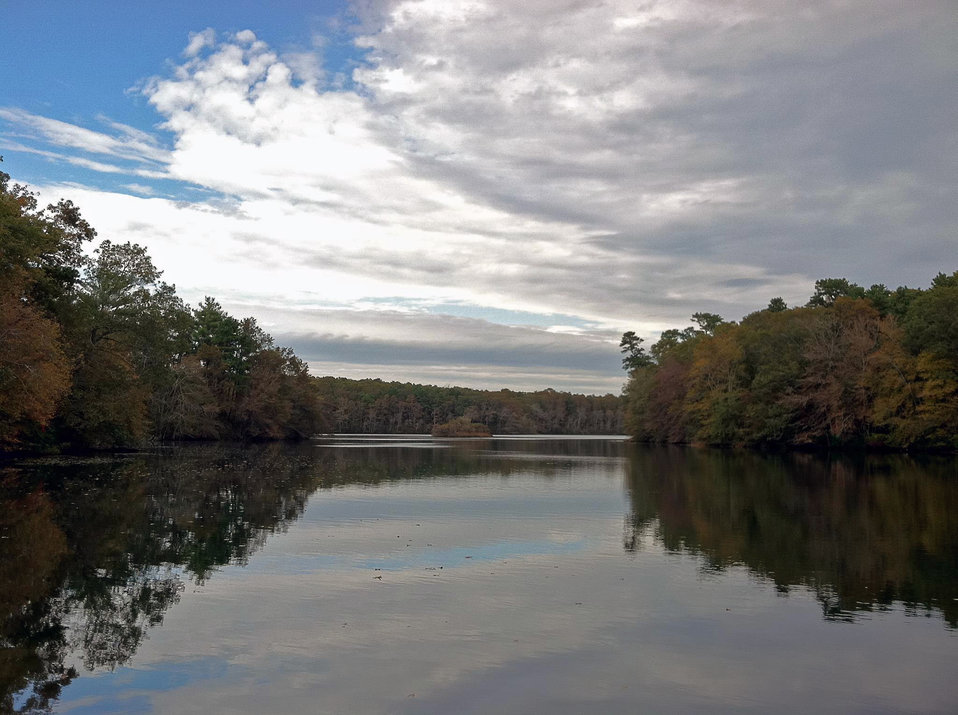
Moody Pond

Mashpee National Wildlife Refuge, MA.